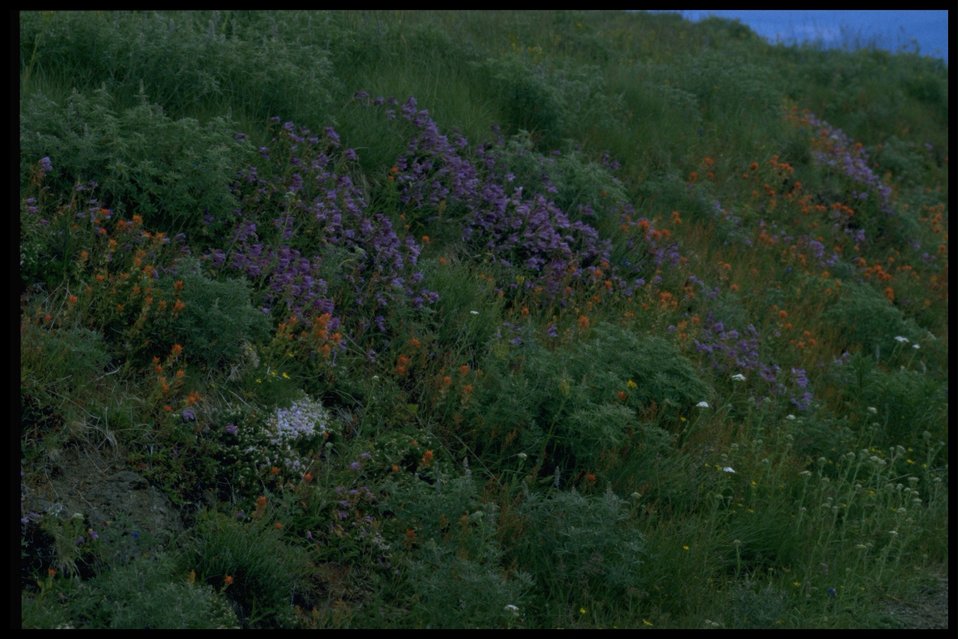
Wide shot of lupine (genus Lupinus).